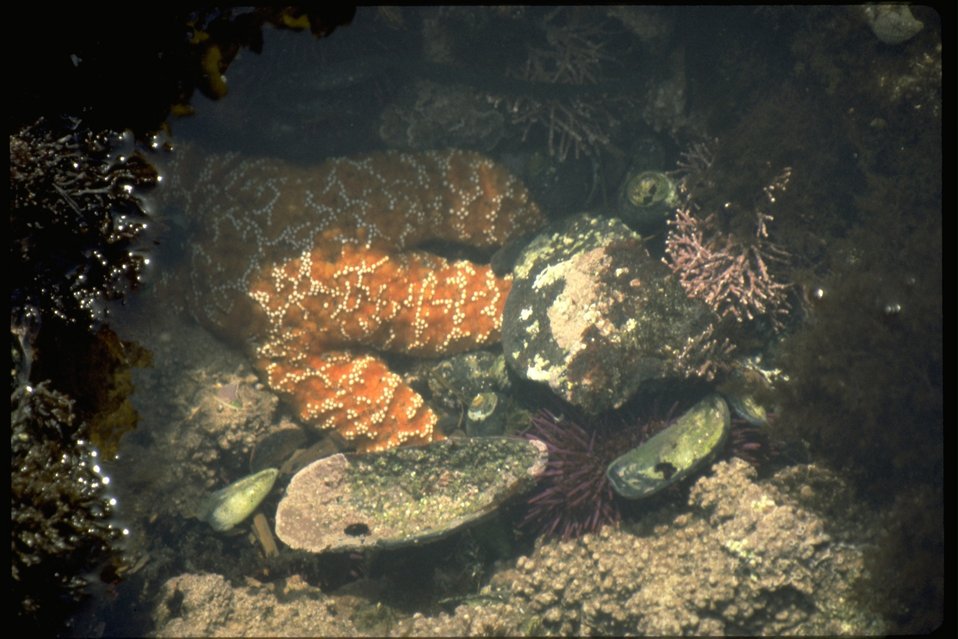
A starfish in the Yaquina Tidepools.